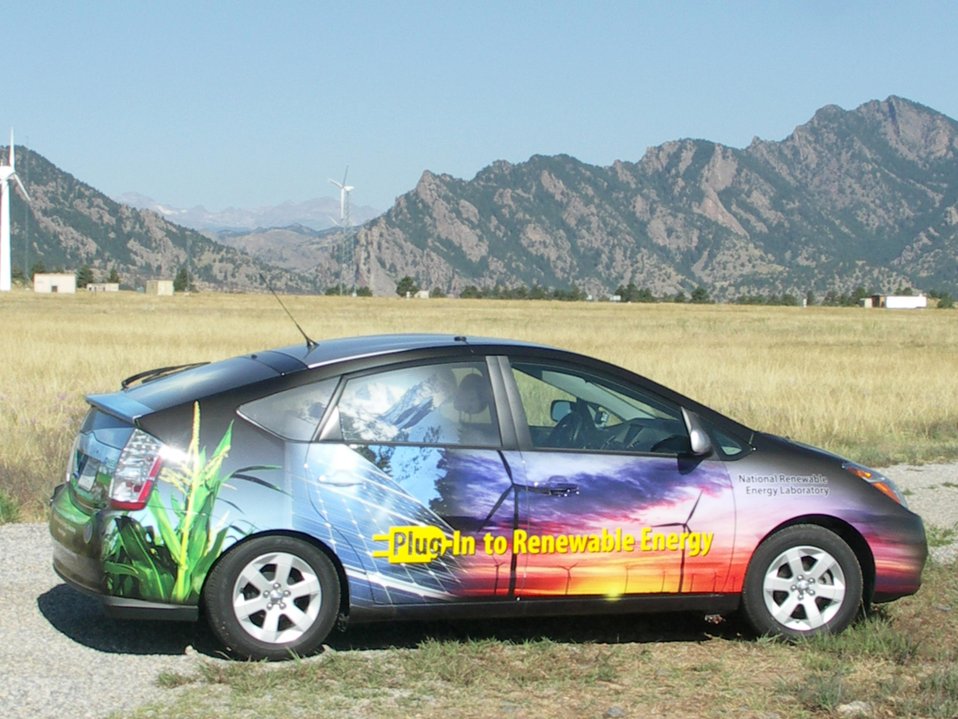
National Renewable Energy Laboratory's Plug-In Hybrid Vehicle (PHEV) at the National Wind Technology Center (NWTC).

The PHEV have a larger battery pack then standard hybrid electric vehicles. This allows Plug-In Hybrids to operate generally on electricity for shorter trips. For longer trips, a Plug-In Hybrid draws fuel from its onboard tank, which provides comparable driving range and performance to a conventional petroleum- fueled vehicle. It is an electric battery that can be charged by plugging its cord into a standard 110-volts outlet. A computer inside the vehicle determines when it's most efficient for the vehicle to be fueled by electricity and by the liquid fuel (not necessarily petroleum; may use biofuels).